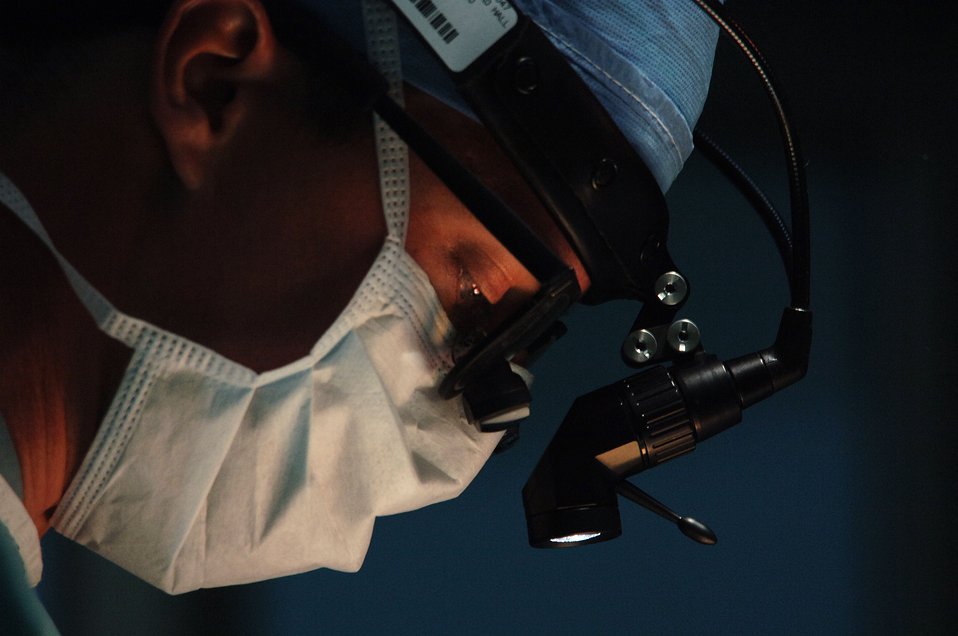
Plastic surgery

CUENCA, Ecuador -- Maj. (Dr.) Ted Ferguson performs reconstructive surgery on 14-year-old Adrian Puata to repair his cleft lip during a 12-day medical readiness training exercise here. Dr. Ferguson is part of a seven-person plastic surgery team from Wilford Hall Medical Center at Lackland Air Force Base, Texas.